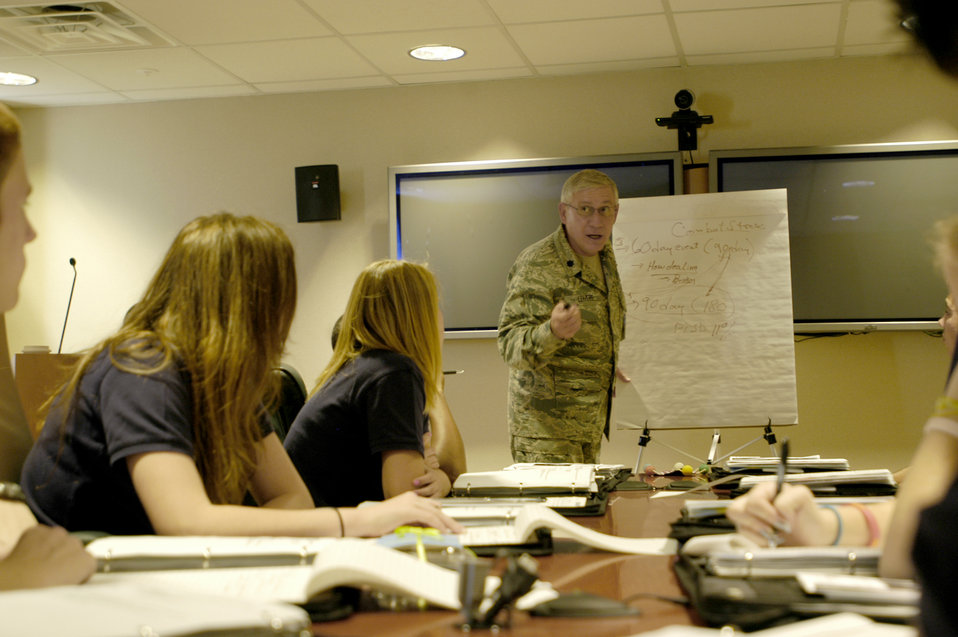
AFR Teen Leadership Council

Teenagers from around the nation gathered at Headquarters Air Force Reserve Command for the first AFR Teen Leadership Council meeting Nov. 12, 2010, at Robins Air Force Base, Ga. The teens, who were selected to represent their peers as members of the council, received briefings on Air Force Reserve Yellow Ribbon Reintegration Program from Chaplain (Lt. Col.) Robert Leivers, from the 310th Space Wing at Schriever Air Force Base, Colo.